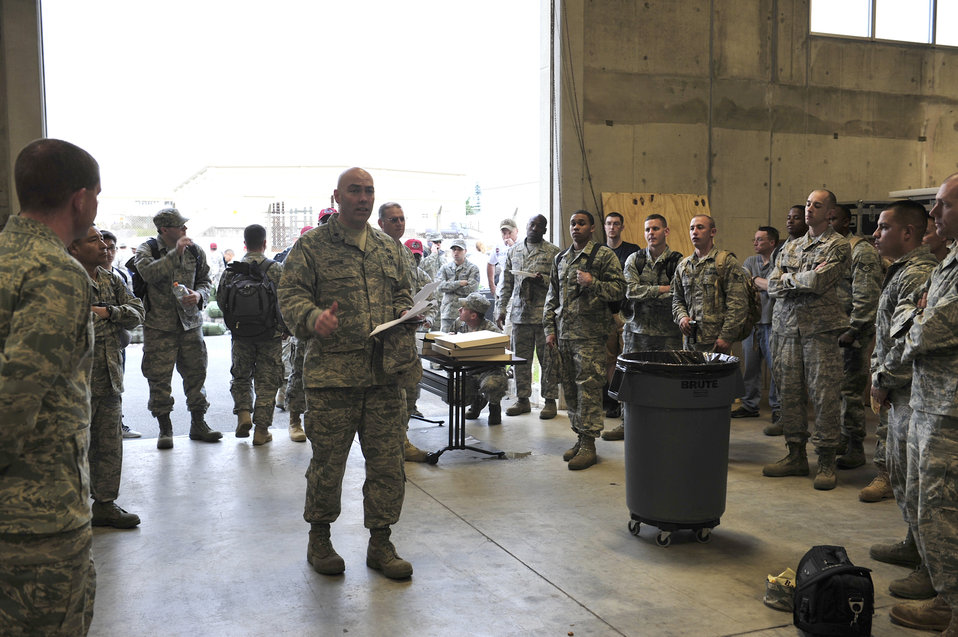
18 CEG pushes north to aid Misawa AB

Lt. Col James Greene, 18th Civil Engineer Squadron briefs members of the 18th Civil Engineer Group before they depart to Misawa Air Base, here at Kadena Air Base, March 12. 18th CEG personnel are providing manning assistance to help Misawa AB regain communication and electronic capabilities after natural disasters hit the surrounding area.